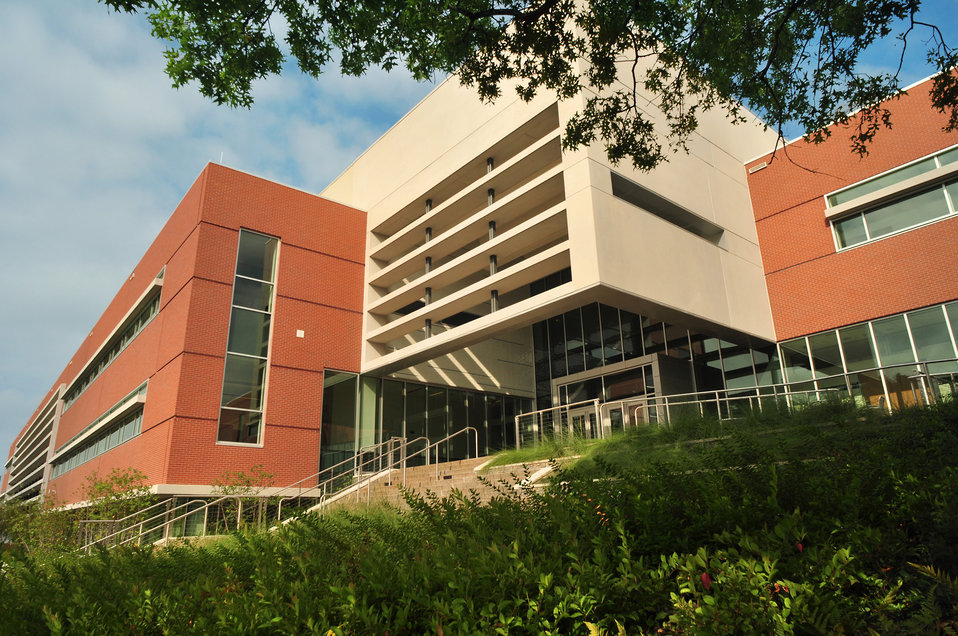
ORNL Chemical and Materials Sciences Facility

Completed in 2011, the Chemical and Materials Sciences facility at Oak Ridge National Laboratory offers DOE scientists the most modern labs to conduct their energy research. The three-story building features 50 laboratories and is LEED-Gold certified.